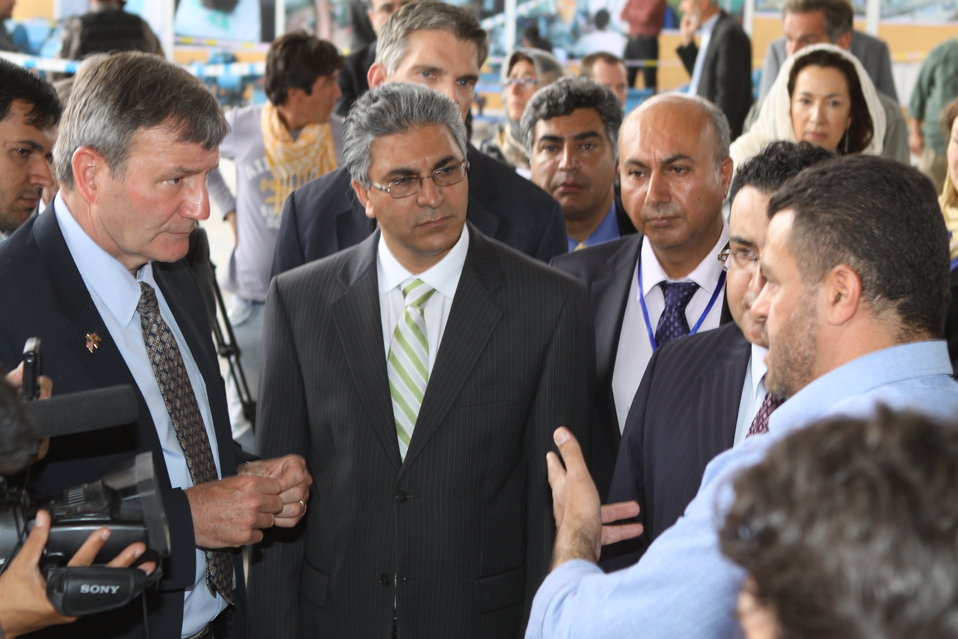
100525 Hirat Marble Conference 422